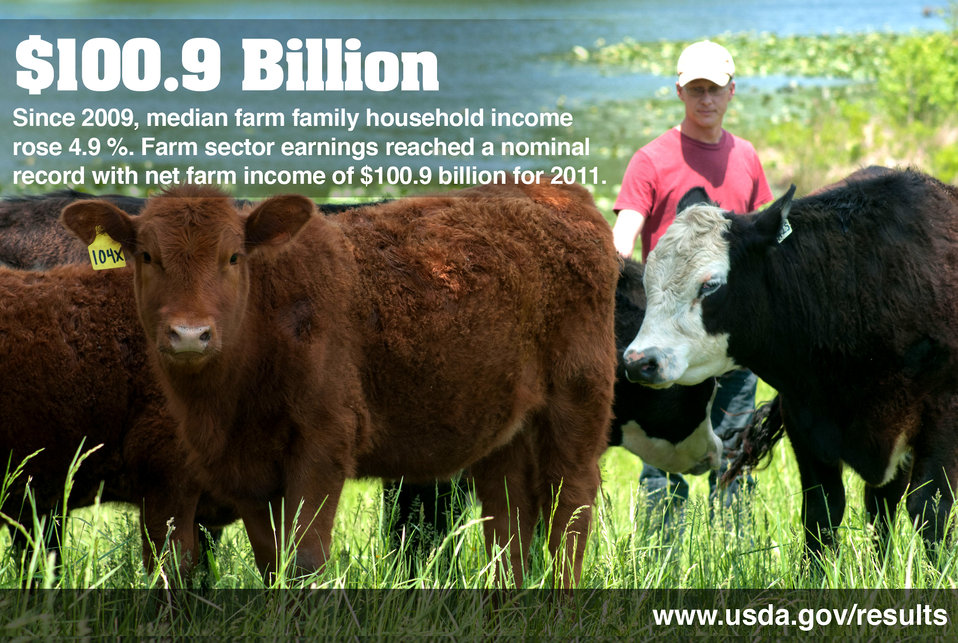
Print-Ag2

Cattle raised by Bruce Johnson at Dragonfly Farm are free-range and grass-fed in Beaverdam, VA, on May 6, 2011. Although there is a fresh-water pond close by the cattle are not allowed in or near it to keep it clean and clear. Sequential use of pastures allows the grass and land to re-grow and recover.